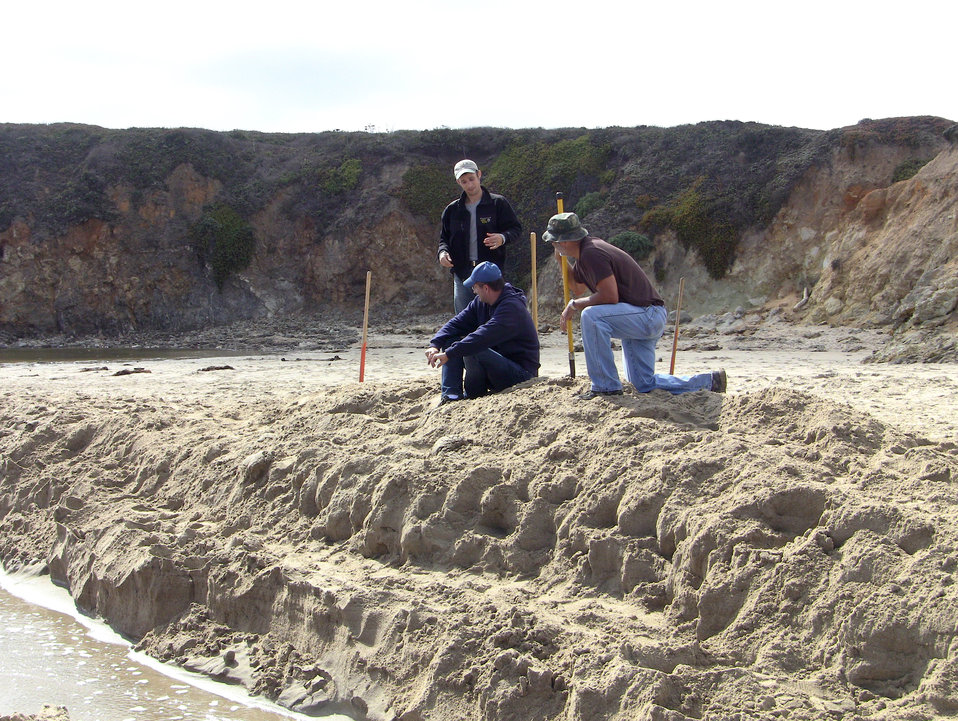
Pescadero Breach18